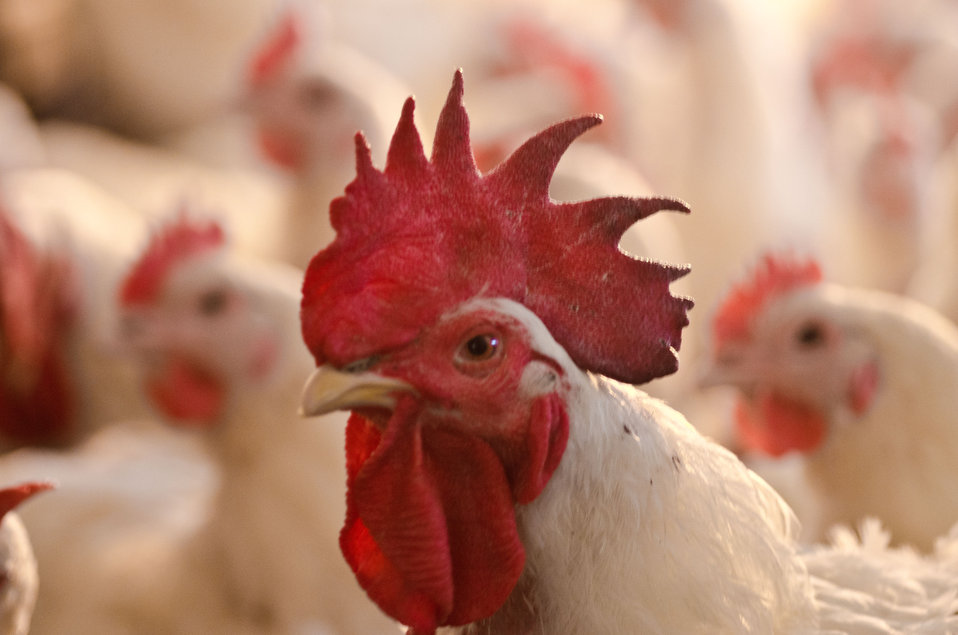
Some of the 17,000 poultry at Seldom Rest Farms located, north of Myerstown, PA, on Wednesday, April 20, 2011. The chickens are kept in a two story chicken house and produce approximately 2.5 million chicks each year. To supplement their electrical needs, they chose a contractor who knew about United States Department of Agriculture (USDA) Rural Energy for America program (REAP) grants and helped them through the application process. The farm was awarded a $152,000 grant (25% of the cost). to install the 1001kW solar array to power their farm, a neighboring farm and homes on the local electrical grid. The 240 solar panels were ground mounted with 5-foot clearance underneath to allow sheep to graze and rest underneath protected from the rain, sun or snowfall. Ten inverters change the DC electrical energy from the panels into AC energy that goes into the local power grid. Spring statistics show it is producing more than expected. REAP offers grants and/or loan guarantees for the purchase and installation of renewable energy generating systems and for energy efficiency improvements.